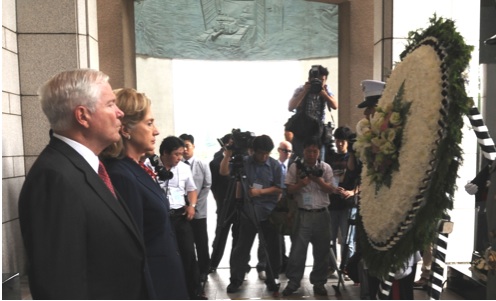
Secretary Gates, Secretary Clinton, Republic of Korea Foreign Minister Yu Myung-hwan, and Republic of Korea Defense Minister Kim Tae-Young Observe a Moment of Silence

(L to R) U.S. Defense Secretary Robert M. Gates, U.S. Secretary of State Hillary Rodham Clinton, Republic of Korea Foreign Minister Yu Myung-hwan, and Republic of Korea Defense Minister Kim Tae-Young observe a moment of silence in honor of the veterans from all nations who lost their lives in the Korean War at the Korean War Memorial in Seoul, South Korea, on July 21, 2010.